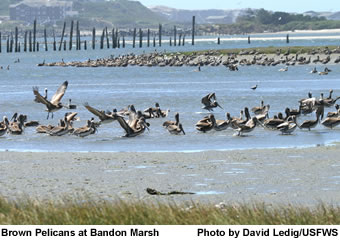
Brown Pelicans in Tidal Salt Marsh

Brown Pelicans in the tidal salt marshes of the Coquille River Estuary at Bandon Marsh National Wildlife Refuge on the South Coast of Oregon.